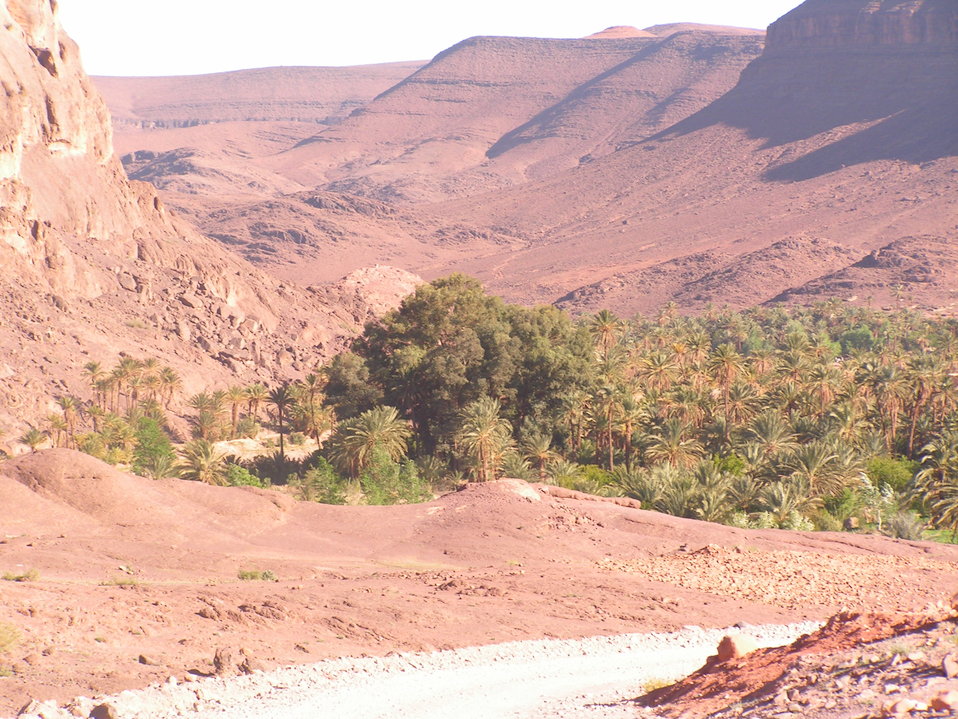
Oasis du Fint, near Ouarzazate, Morocco